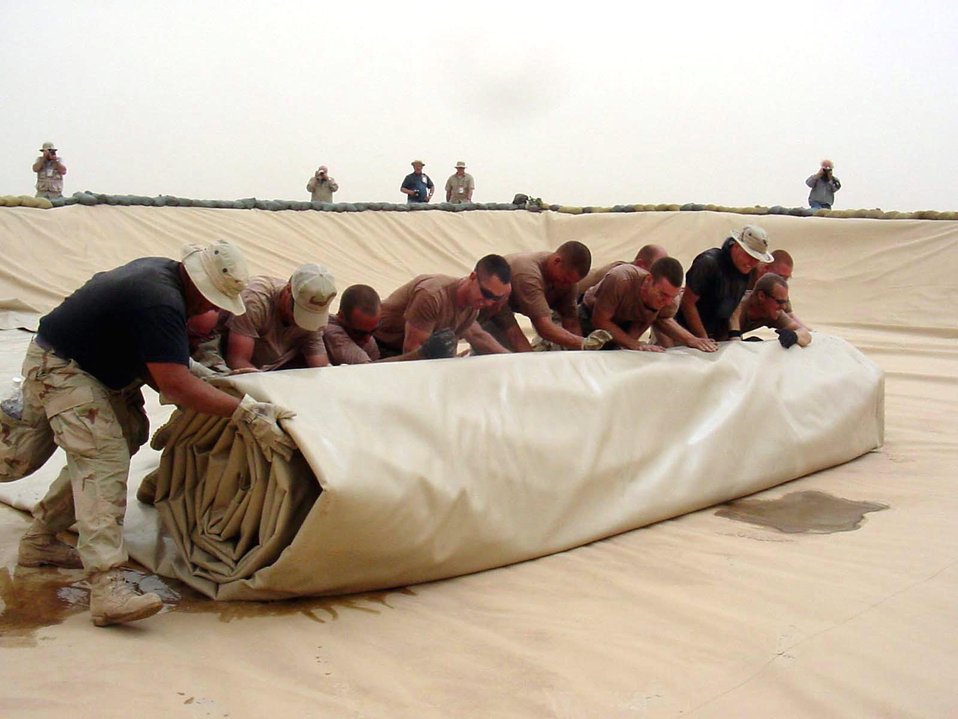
Rolling, rolling, rolling...

OPERATION IRAQI FREEDOM (AFPN) -- Fuel specialists at Tallil Air Base in southern Iraq, unroll the final 210,000 gallon fuel bladder here. The new bladder allows the airmen to fuel aircraft and vehicles used by the Air Force, Army and Marines.